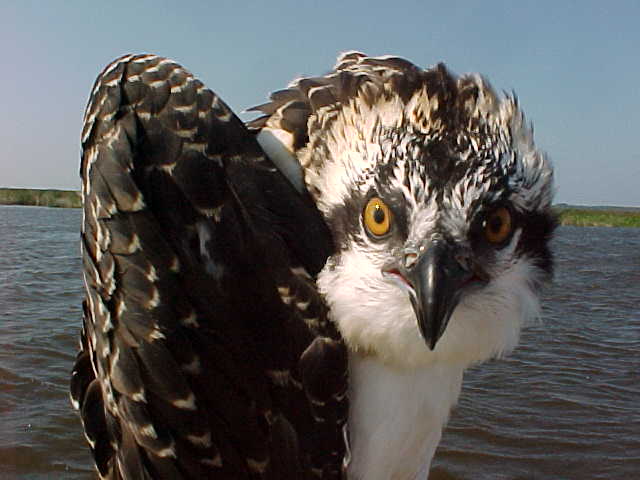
Photo of the Week - Osprey at Back Bay National Wildlife Refuge (VA)

Photo of the Week - 4/14/10

An osprey at Back Bay National Wildlife Refuge in Virginia.